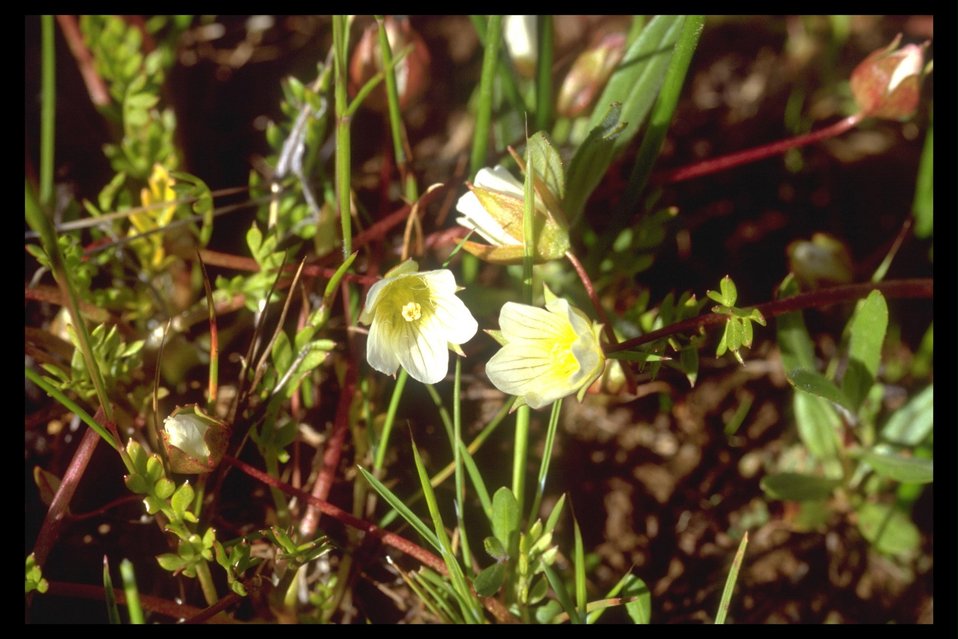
Dwarf Wooly Meadowfoam (Limnanthes floccossa ssp. pumila) found at the Upper Table Rock. note: this species only grows on the Table Rocks!